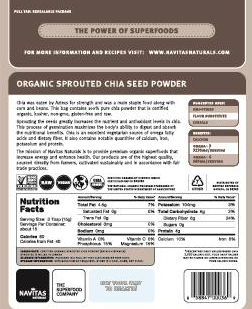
RECALLED – Sprouted Chia Seed Powder Products

June 6, 2014 – Product Recall – Navitas Naturals Expands Voluntary Recall for Organic Sprouted Chia Powder Products.